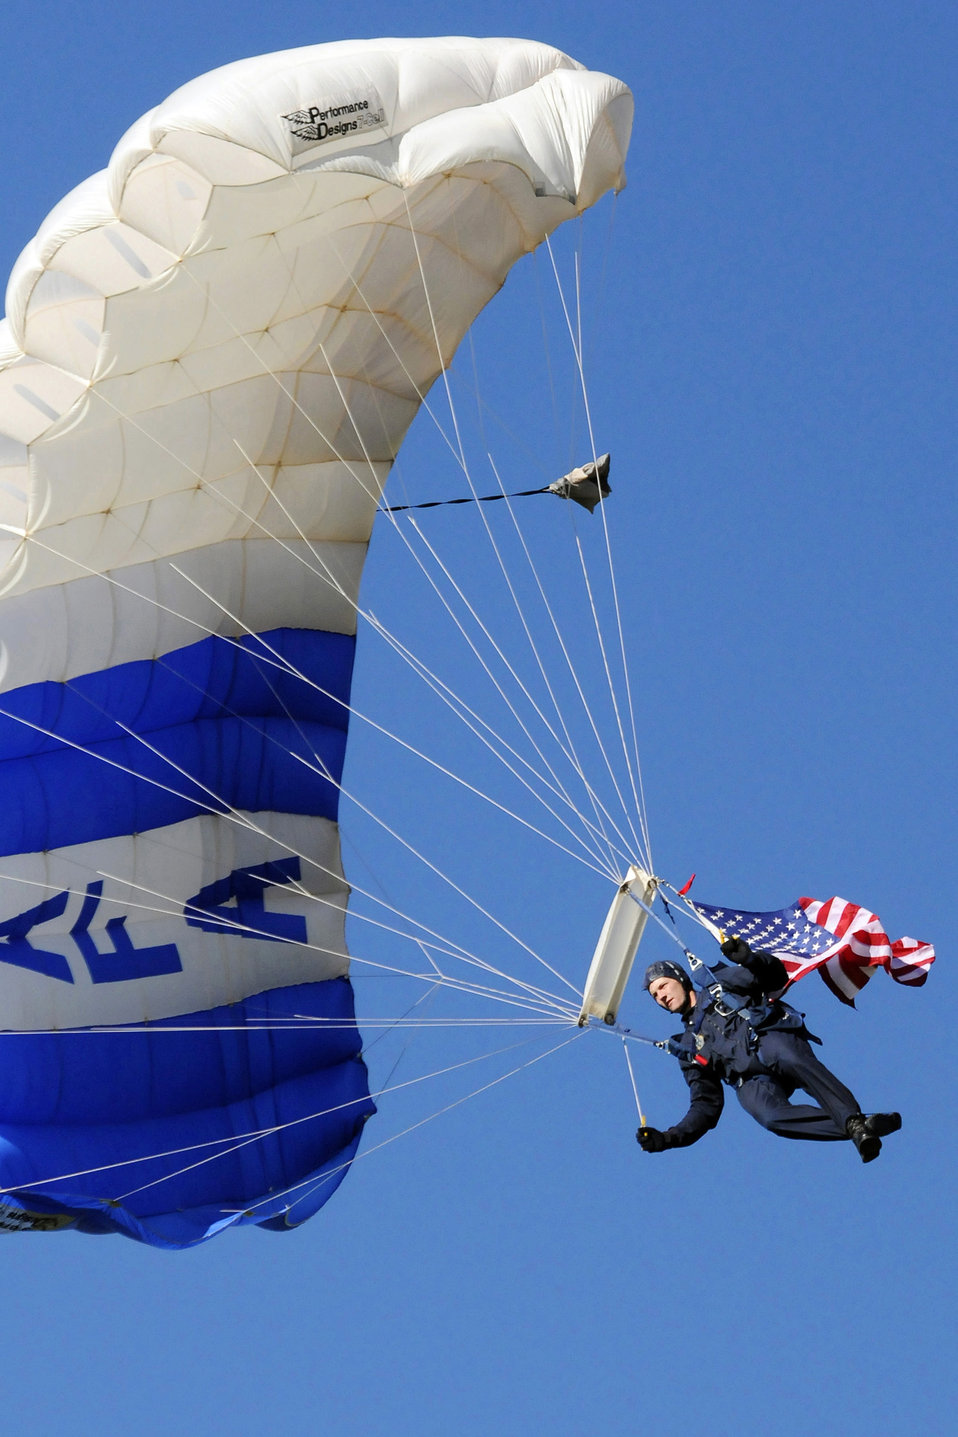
Academy acceptance parade

U.S. Air Force Academy Cadet 1st Class Spencer Walker parachutes onto Stillman Field to open the Acceptance Parade Aug. 5 at the Academy in Colorado. The parade marks the official end of Basic Cadet Training and formally welcomes the new class into the cadet wing.